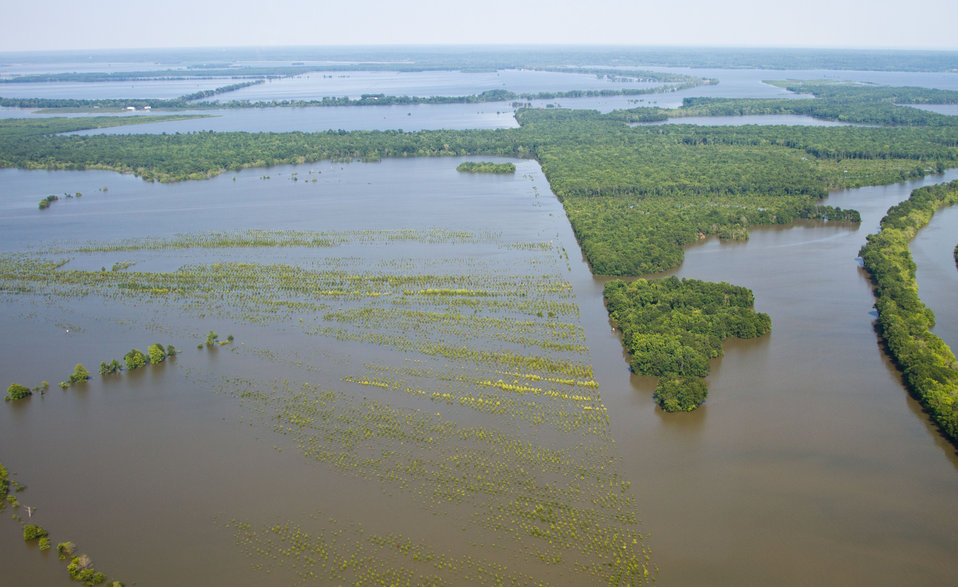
Aerial view of Mississippi River flood of farms, wilderness, and populated areas, on Thursday, May 19, 2011. from the MS side. Aerial platform was a UH-60 Blackhawk commanded by Col. Kennedy and his flight crew from the Army Aviation Support Facility #1 at Hawkins Field in Jackson, MS.